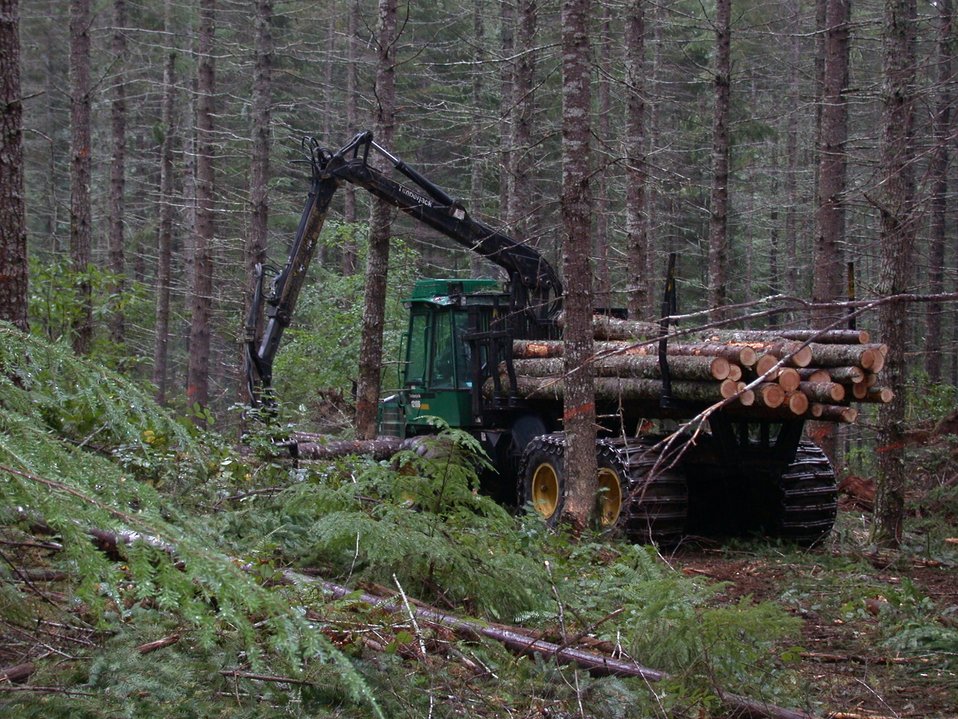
Camas East Timber Sale in Late Successional Reserve.